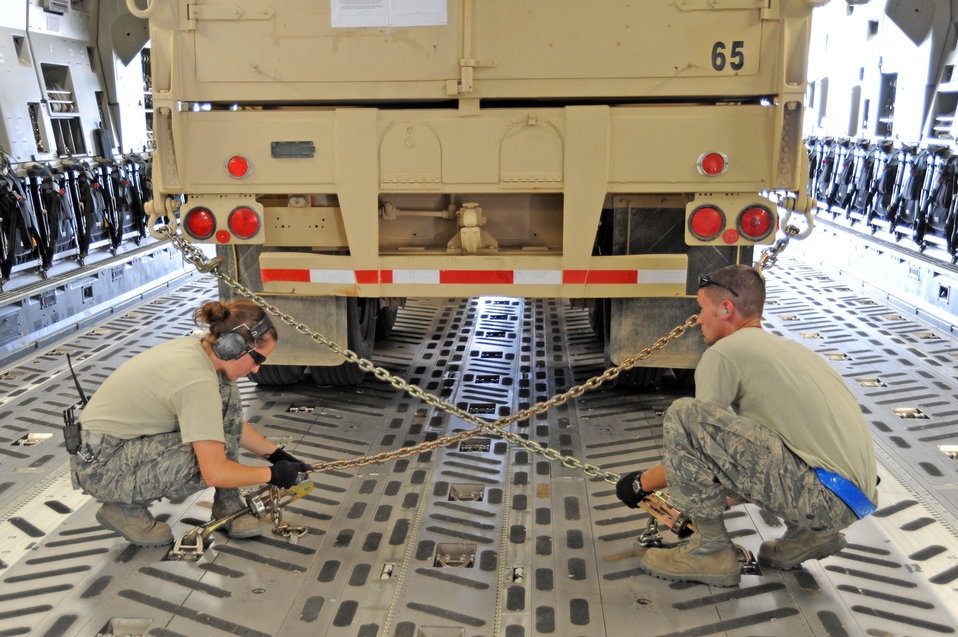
380th

Staff Sgt. Paige Greene and Senior Airman Russell Chamblee secure a 25 foot bulk helium trailer as part of a helium loading mission Aug. 24, 2010 at a non-disclosed base in Southwest Asia. Sergeant Greene is a flight supervisor and Airman Chamblee is a flight specialist. Both are with the 380th Expeditionary Logistics Readiness Squadron. The 380th ELRS delivers approximately 90,000 thousand pounds of helium per week to the area of responsibility.